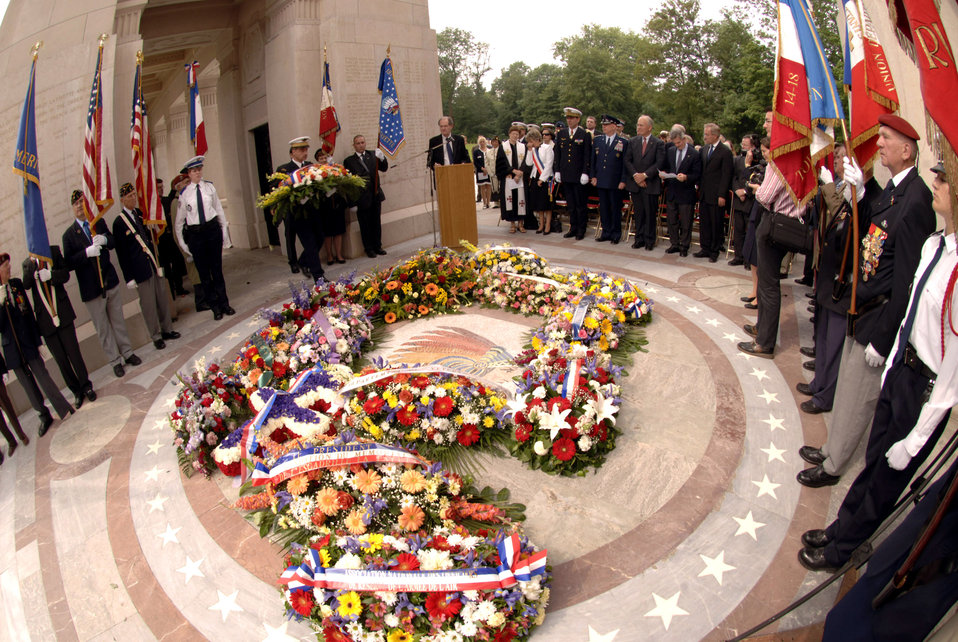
Early aviators memorialized

A final bouquet of flowers is added to a floral display during a ceremony at the Lafayette Memorial outside Paris to pay homage to the United States' first combat aviators who comprised the Lafayette Escadrille. The all-American squadron of volunteers flew under the French flag during World War I where many gave their lives. Among the dignitaries attending the ceremony were Air Force Chief of Staff Gen. T. Michael Moseley and his counterpart, French Gen. Stephane Abrial.